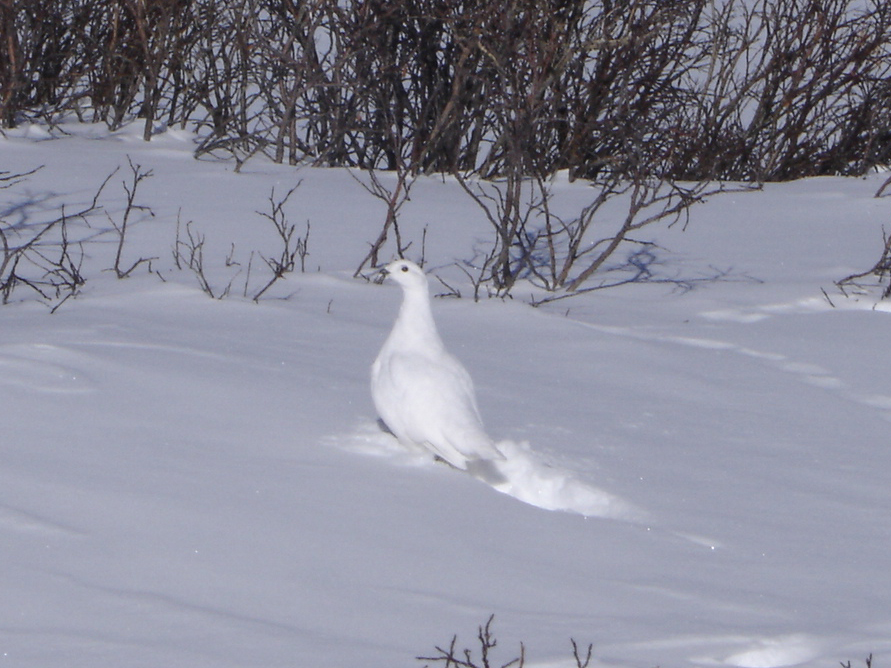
White-tailed Ptarmigan on Alert

Male and female white-tailed ptarmigan share similar body size, shape, and winter plumage, with adult body lengths up to 13.4 inches (34 centimeters) and body masses up to 0.9 pound (425 grams). Both the southern and Mt. Rainier white-tailed ptarmigan are white in winter and brown in summer, the feathers changing color with the seasons to camouflage the birds. Although the body feathers change color, the white-tailed ptarmigan is named for its perpetually white tail feathers, a morphological trait that distinguishes it from other ptarmigan species. During the winter, males and females are stark white and difficult to distinguish from the background of snow. In the summer during the breeding season, males turn a lighter color of brown or gray than females and develop a dark band of feathers on the breast that resembles a necklace.

During the winter, the southern and Mt. Rainier white-tailed ptarmigan feed on exposed willows above the snow and dig roosts, or burrows, into the soft snow as protection from wind and weather. During the summer, the white-tailed ptarmigan feeds on willows and other alpine vegetation. White-tailed ptarmigan require cool temperatures, rocky areas, soft snow, and the presence of willows. The southern and Mt. Rainier white-tailed ptarmigan spend their entire lifecycles in alpine habitats and are well adapted to survive in the cold, arid, and open alpine environments. Adaptations of the white-tailed ptarmigan to these alpine environments include its cryptic plumage, low metabolic rates, and heavily feathered feet that act as snowshoes.